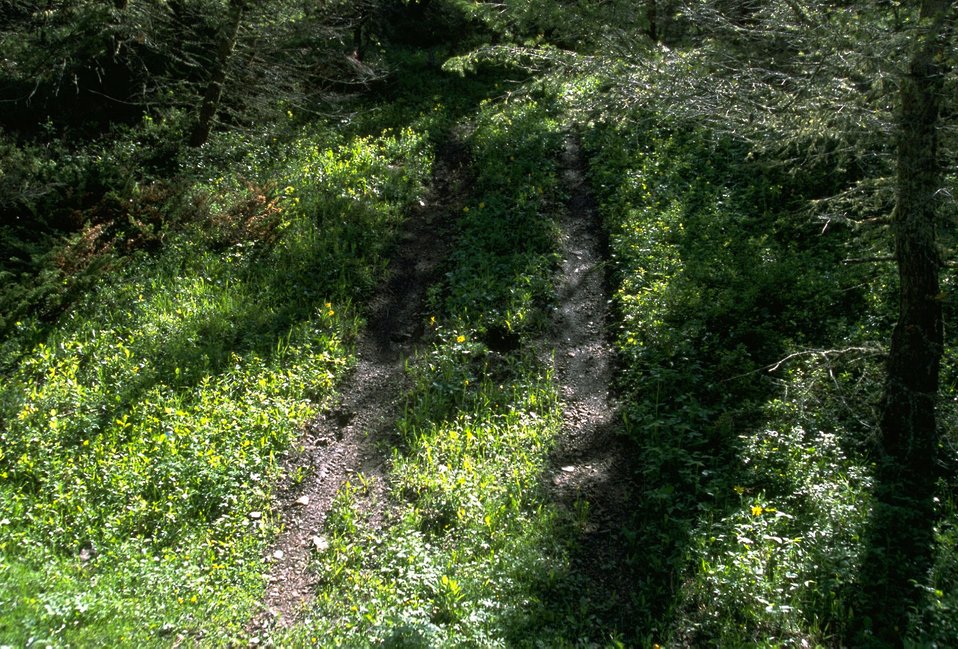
Damage to the terrain by an off-highway vehicle